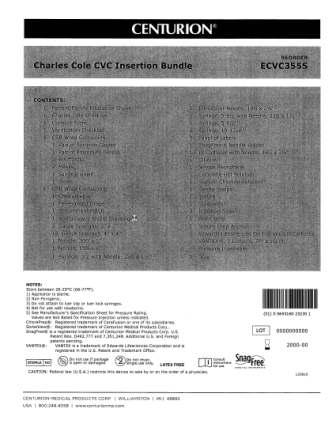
RECALLED - Convenience kits which contain bacteriostatic sodium chloride solution by American Regent

April 1, 2011 - Product Recall - Centurion Medical Products Initiates Voluntary Recall of Customized Convenience Kits (including select Central Venous Catheter, PICC Insertion, and VAD Trays) that contain American Regent’s Bacteriostatic Sodium Chloride Injection, USP, 0.9% 30 mL Multiple Dose Vials.